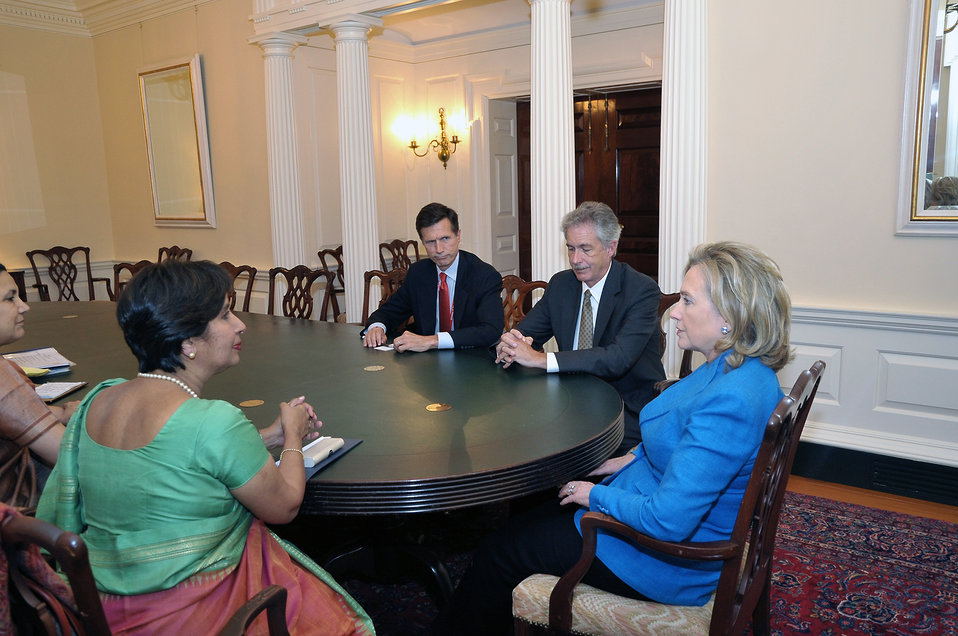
Secretary Clinton, Under Secretary Burns, and Assistant Secretary Blake Meet With Indian Foreign Secretary Rao

U.S. Secretary of State Hillary Rodham Clinton (center), U.S. Under Secretary of State for Political Affairs William J. Burns (right of the Secretary), and U.S. Assistant Secretary of State for South and Central Asian Affairs Robert O. Blake (left of Under Secretary Burns) Indian Foreign Secretary Nirupama Rao at the U.S. Department of State in Washington, D.C., on September 17, 2010.